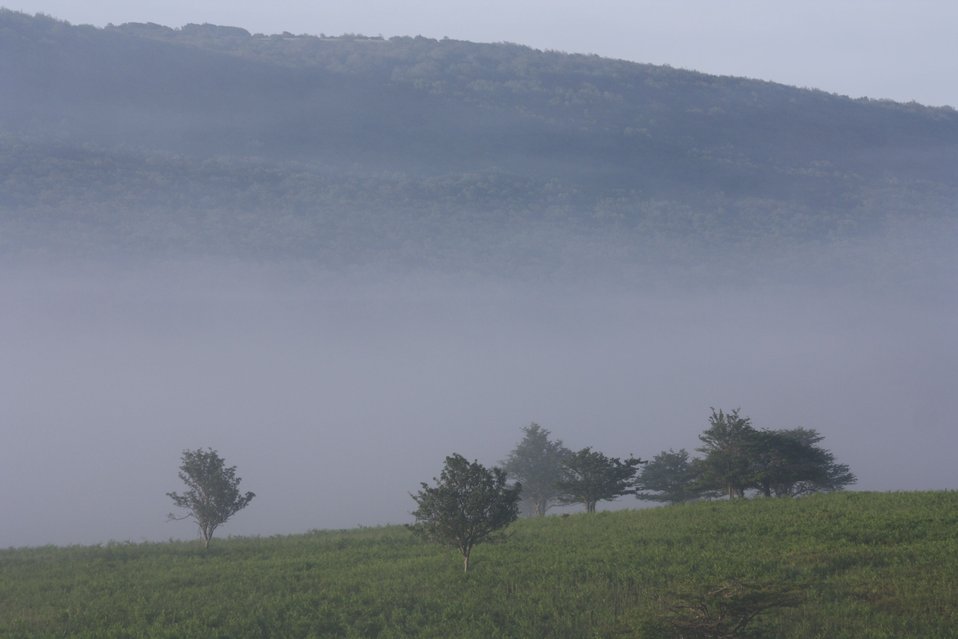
mist on Middle Valley Trail, Canaan Valley Refuge